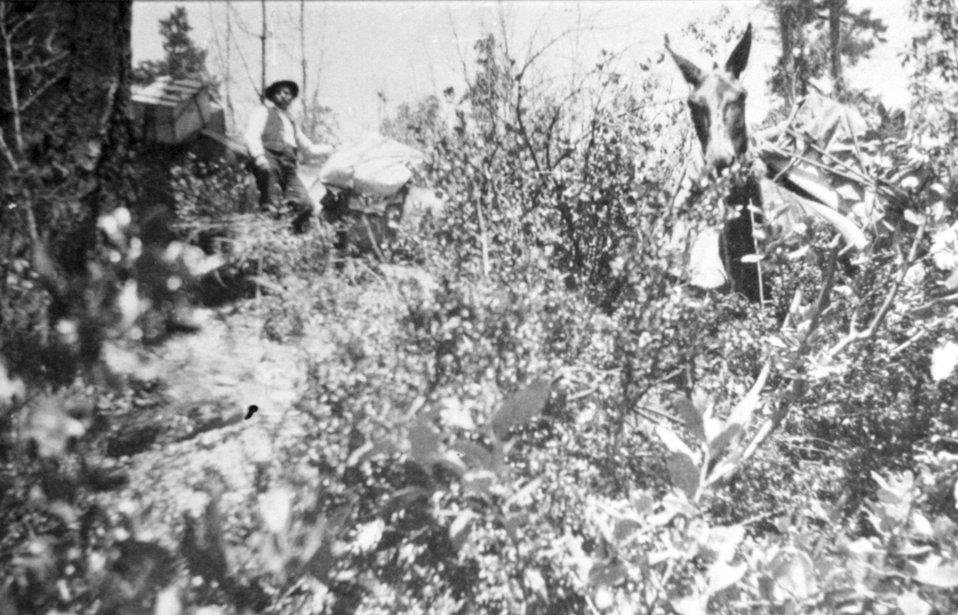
George Billings packing.